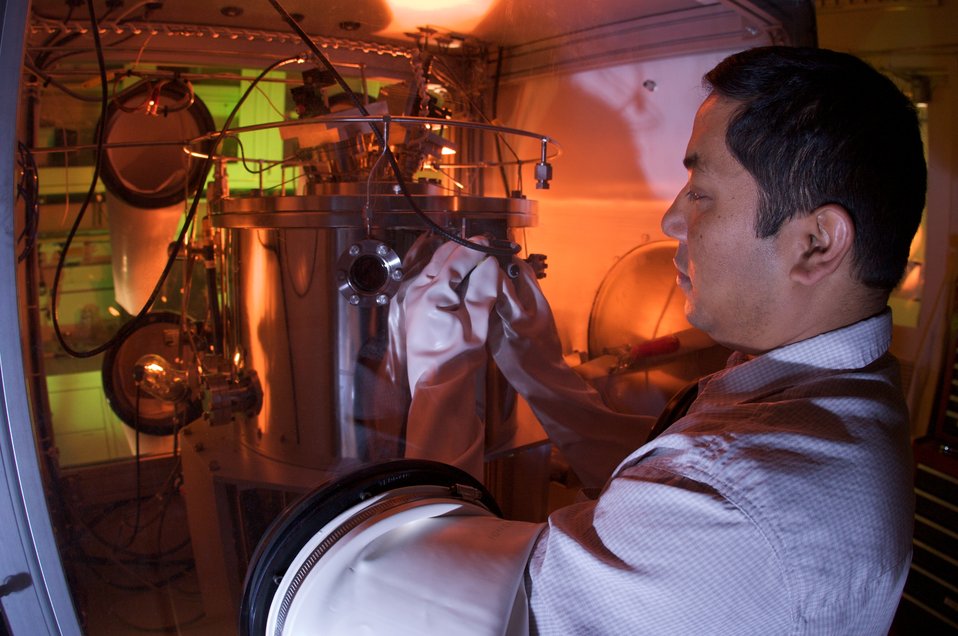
POSTDOCTORAL RESEARCHER PRADEEP MANANDHAR PREPARES A CHEMICAL VAPOR DEPOSITION SYSTEM FOR THE GROWTH OF NANOWIRES AT THE CENTER FOR INTEGRATED NANOTECHNOLOGIES.

CINT is one of five NSRC's throughout the U.S. that form an integrated national program, affiliated with major facilities at the DOE's national laboratories, to cover the diverse aspects of nanoscience and technology. The complex aspires to become a cornerstone of the nation's nanotechnology revolution, contributing to DOE's principle missions in national defense and the environment while providing an invaluable resource for universities and industries. It's core facility in Albuquerque and gateway facilities at Los Alamos and Sandia National Laboratories. CINT provides open aces to tools and expertise needed to explore the continuum from scientific discovery to the integration of nanoscience into the Micro and Marco world.